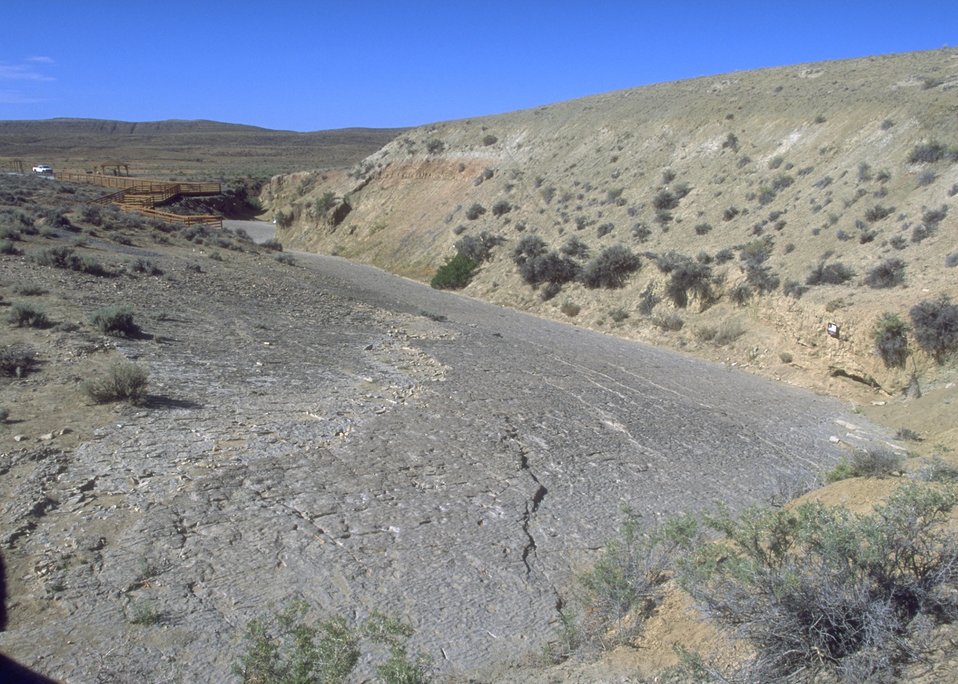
View of tracksite at Red Gulch Dinosaur Tracksite along Red Gulch/Alkali Back Country Byway, Worland Field Office.